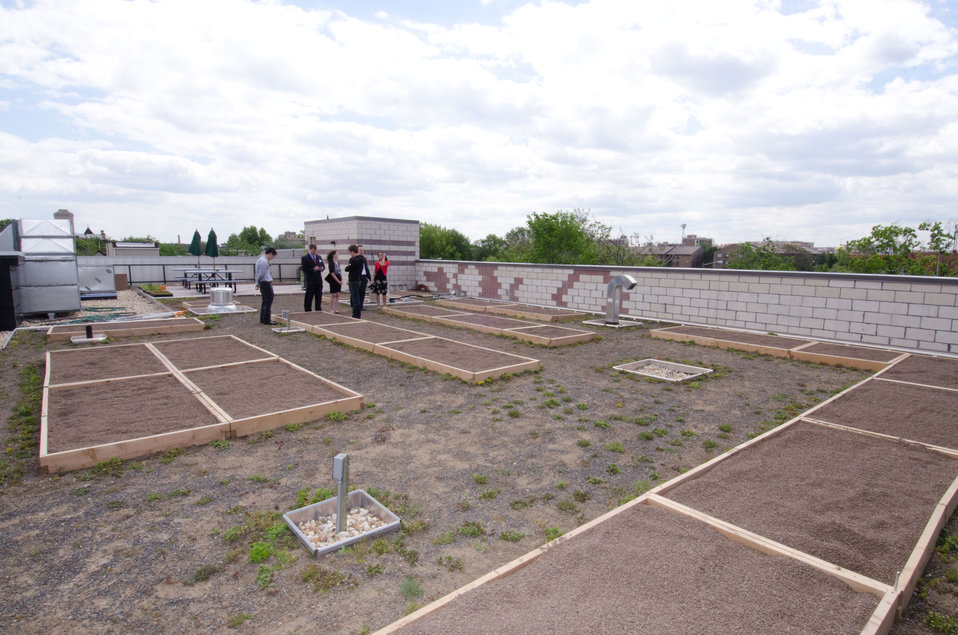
Volunteers prepare the rooftop vegetable garden for planting at Bread for the City in Northwest Washington, DC, on Friday, April 29, 2011. The garden features specialized soil made of organic and inorganic material for rooftop gardens. The 26 wooden planters are about 4 inches tall but are not separate from the soil covering the roof, so there is a 10' depth to the plant in the boxes. Ground cover plants are already on site and await a team of volunteers to plant them in the walkways to retain moisture and help keep the soil temperature stable. This will be the largest of this kind in the Metro DC area. In addition to supplementing the fresh vegetables given to the community, it will also allow local residents to grown produce that is not normally marketed in this area.